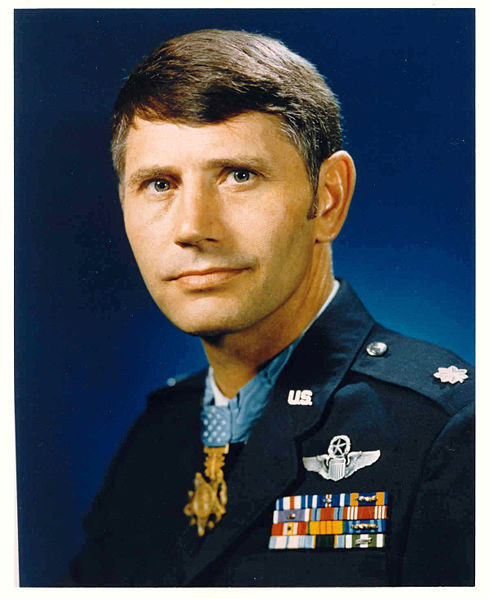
Col. Leo Thorsness, Medal of Honor recipient.